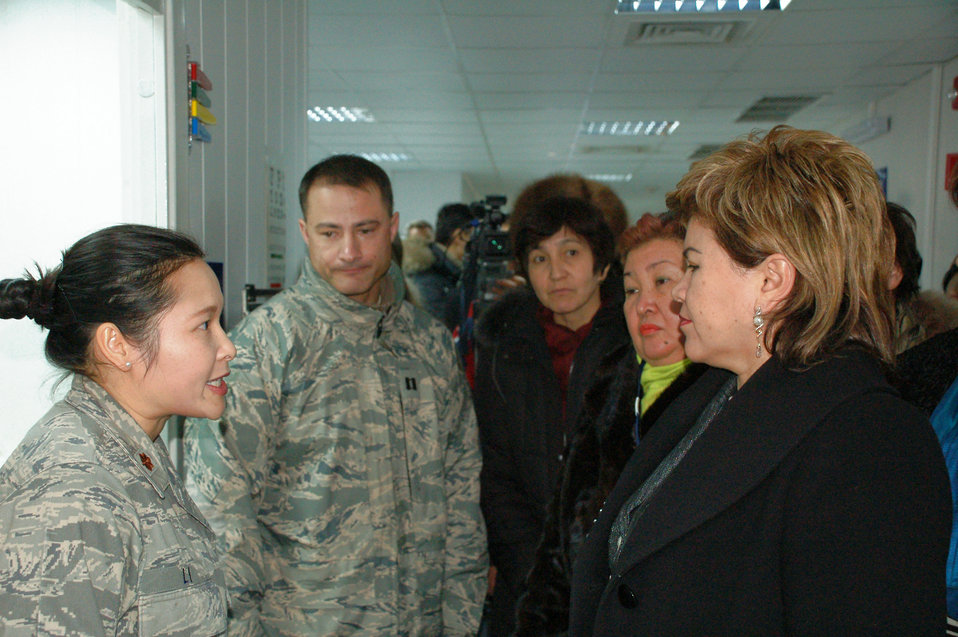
Manas Airmen host Kyrgyz Congress of Women

Maj. Wah Sze talks about her job as a doctor here to members for the Kyrgyzstan Congress of Women during a Jan. 8 tour of Manas Air Base, Kyrgyzstan. The group, which consisted of female civic and business leaders from throughout Kyrgyzstan, visited the base to meet with Airmen and to learn more about the mission and the contributions of women who serve there. Major Sze is assigned to the 376th Expeditionary Medical Group.